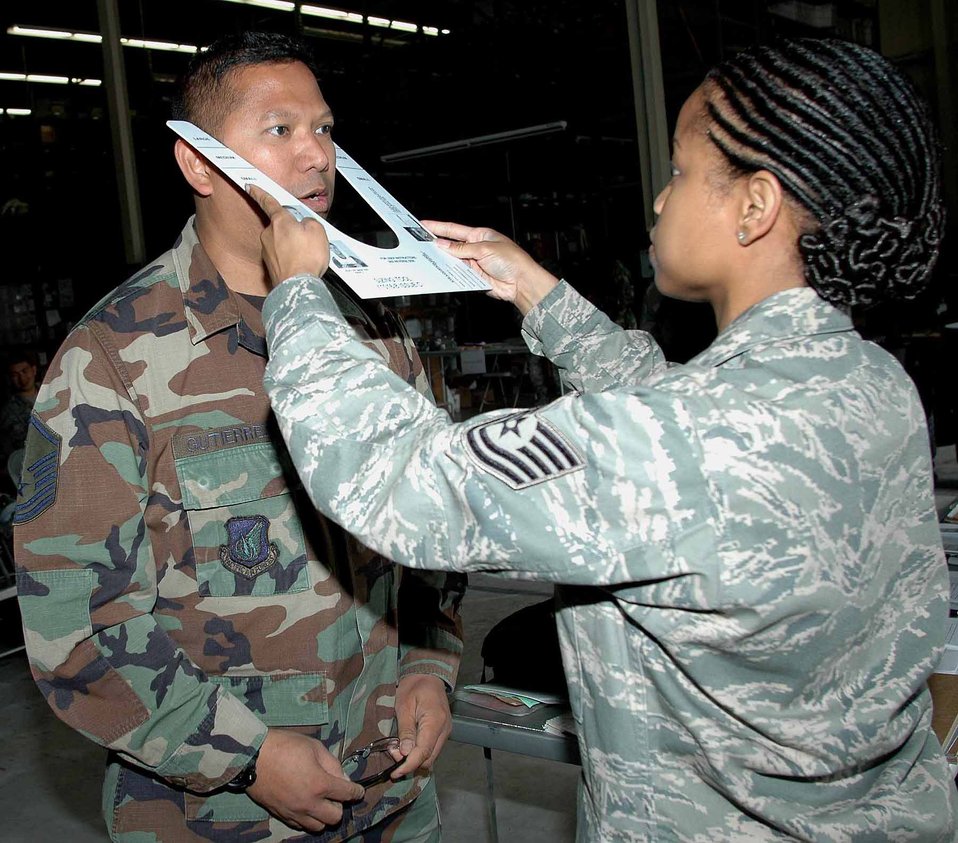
Osan gets technologicaly advanced protective masks

Tech. Sgt. Kochitia Kimbrough measures Master Sgt. Roberto Gutierrez for his new M-50 protective mask June 9 at Osan Air Base in South Korea. The new mask offers the same level of protection against chemical, biological and radiological threats as the MCU 2, but takes advantage of technological advancements. Sergeant Kimbrough is with the 51st Logistics Readiness Squadron and Sergeant Gutierrez is with the 51st Medical Operations Squadron.